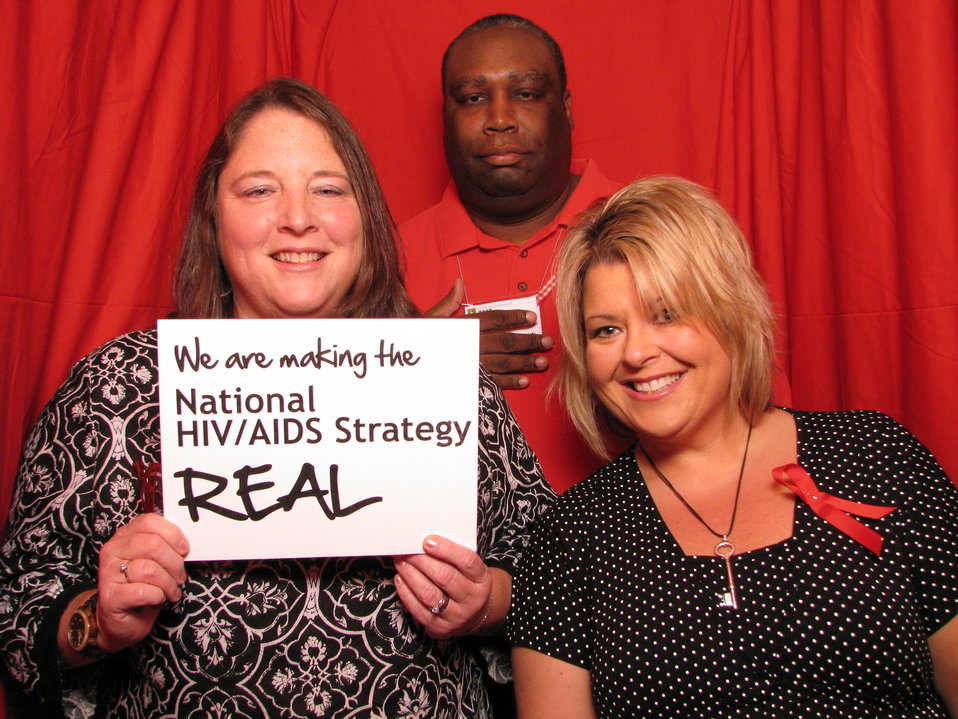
We are making the National HIV/AIDS Strategy REAL

From the AIDS.gov photo booth at the U.S. Conference on AIDS, September 2010 (Orlando, FL).